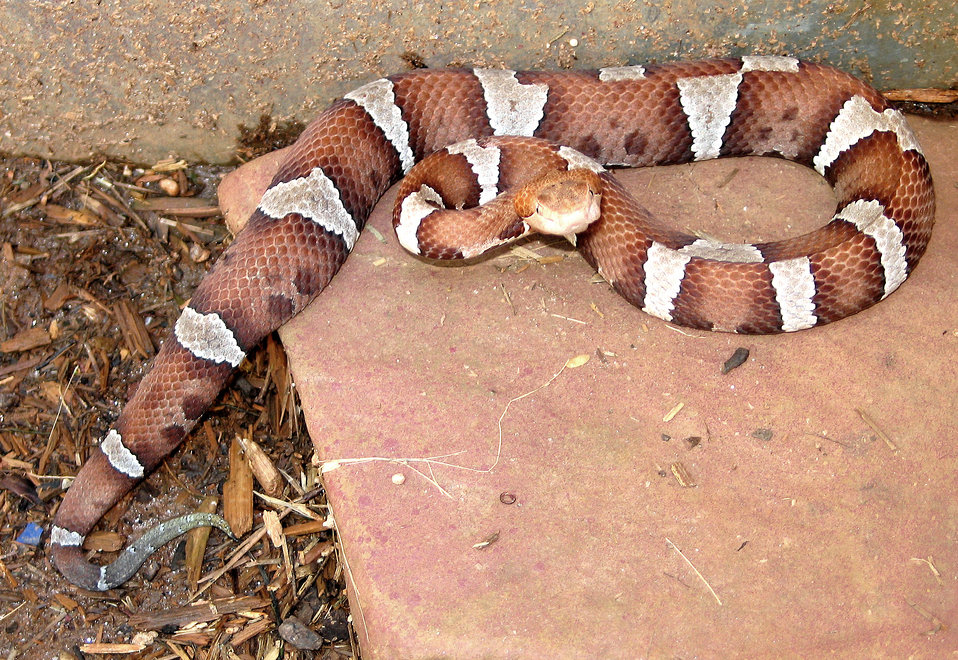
This 2005 image depicted a venomous 'trans-Pecos' copperhead snake, Agkistrodon contortrix pictigaster. As the southwestern-most subspecie, it is the only copperhead that ranges across the Rio Grande into Mexico (Cambell and Lamar 2004). It lives in a variety of habitats throughout the Chihuahuan Biotic Province of southwestern Texas and adjacent North-central Mexico, and is therefore, present only in the southwestern extreme of the hurricane-prone area of the United States (Gloyd and Conant, 1990), which is of importance to those who live in these regions, and first-responders offering aid to those affected by such a disaster. Its home includes riperian woodlands, forested canyons, canebrakes, and dry scrubby flatlands, preferring piles of dead cane that accumulate along rivers, which makes it particularly vulnerable to being translocated by rapidly rising flood waters (Gloyd and Connant, 1990) such as those associated with hurricane-associated floods.